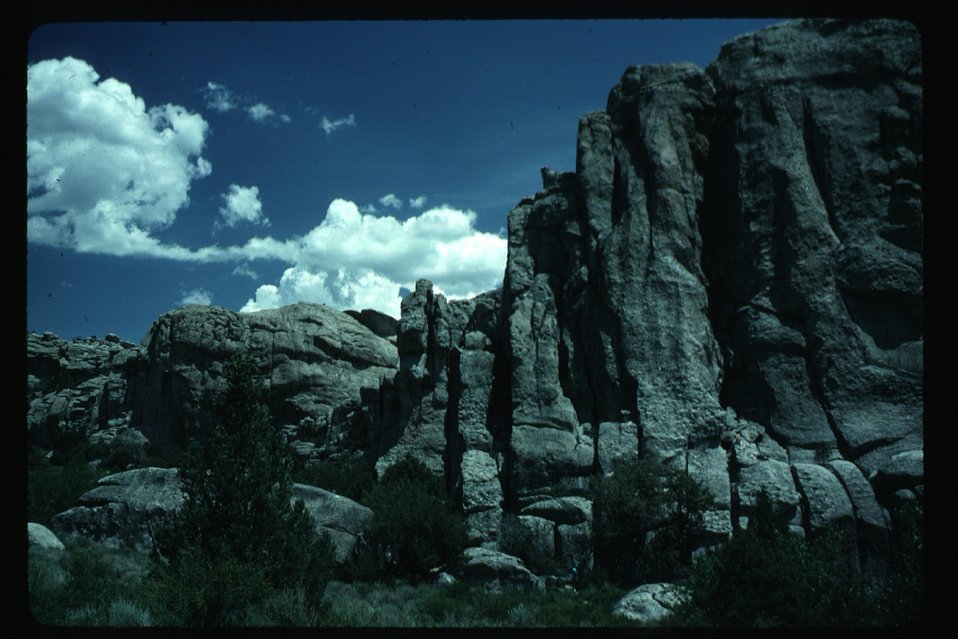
Rock climber Burley City of Rocks Burley Field Office USRD Upper Snake River District